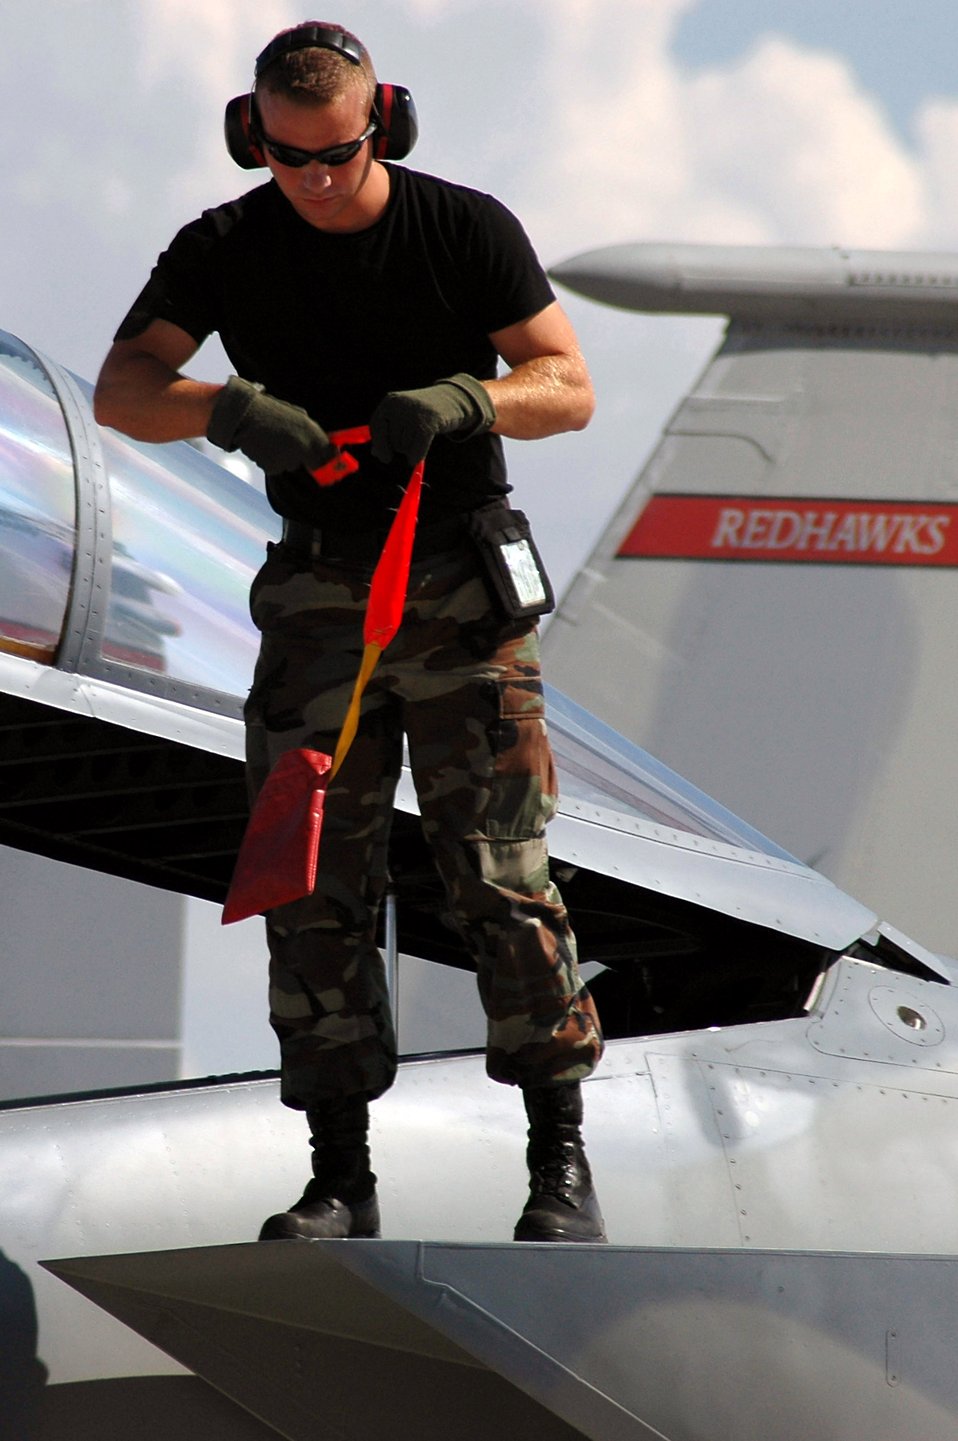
Revving up for Red Flag

Crew chief Staff Sgt Adam Pattison pulls pre-flight safety pins on an F-15 Eagle during the Red Flag 07-3 exercise Aug. 28 at Nellis Air Force Base, Nev. Servicemembers from all the U.S. military branches, along with coalition forces, are participating in the event. Sergeant Pattison is an Air National Guard member assigned to the 142nd Fighter Wing at Portland, Ore.